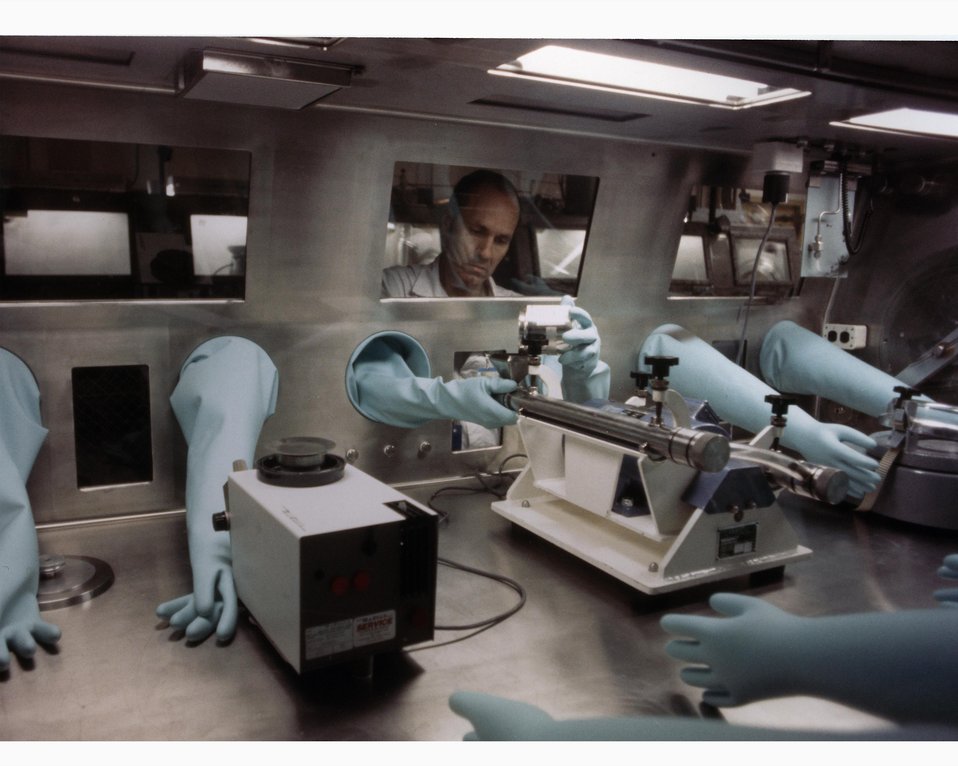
TECHNICIAN IS POURING RADIOACTIVE MATERIAL ONTO A GRINDING DEVICE.

THE PLUTONIUM FACILITIES AT THE TA-55 AT LANL ARE USED FOR WORK ON THE TWO MAJOR ISOTOPES, PU-239 AND PU-238, OF THE MAN-MADE ELEMENT PLUTONIUM. TA-55 PROGRAMS HAVE ENCOMPASSED MANY PHASES OF PLUTONIUM RESEARCH AND DEVELOPMENT. OPERATIONS BEGAN IN APRIL, 1978.